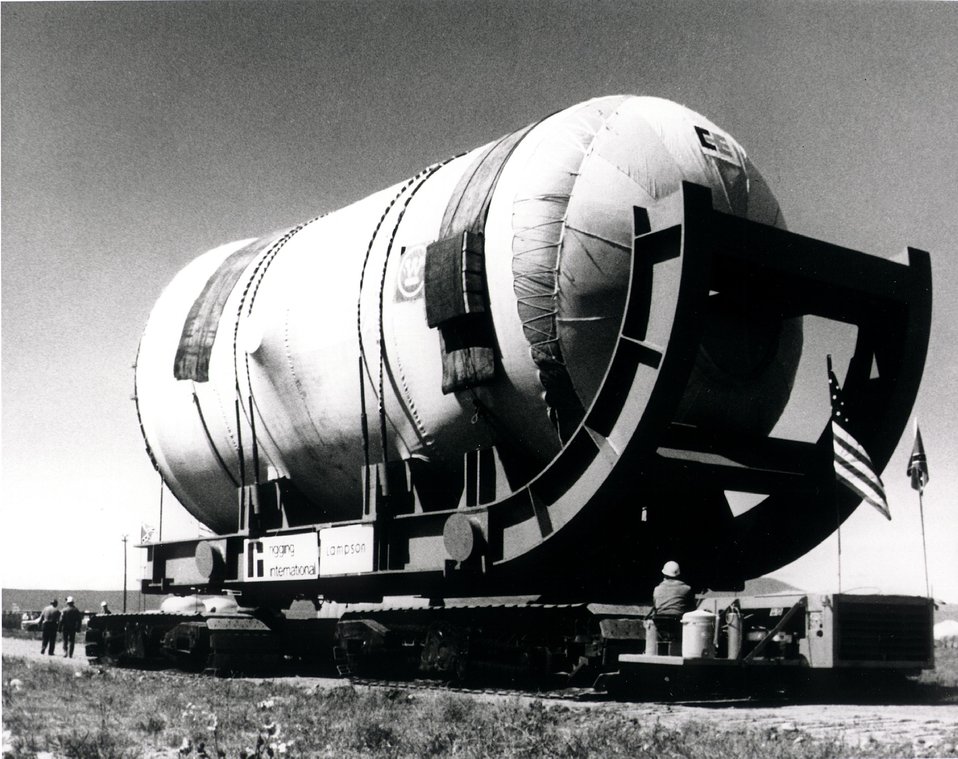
The mammoth 350-ton Fast Flux Test Facility reactor vessel is shown on its arrival at the test reactor construction site seven miles north of Richland, Washington. c. 1974.